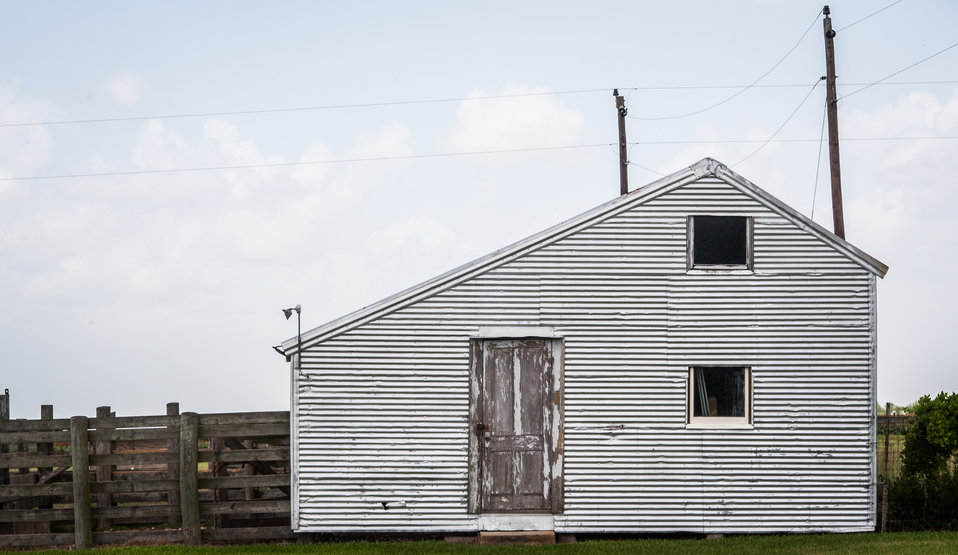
This is one of the original buildings of the Popp Farms 05 (pronounced Pope) purchased more than thirty years ago by Cedric Popp. The farming family spans five generations and is now based in El Campo, TX on June 20, 2013. Their 2,400 acres of farmland currently grows cotton and milo (grain sorghum) and are part of the United Agricultural Cooperative, Incorporated. Cedric Popp and his wife are currently the senior partners in the business, and his son Michael is the junior partner. Michael and his wife Melissa are raising their son Hayden (2) as the future generation in family farming.